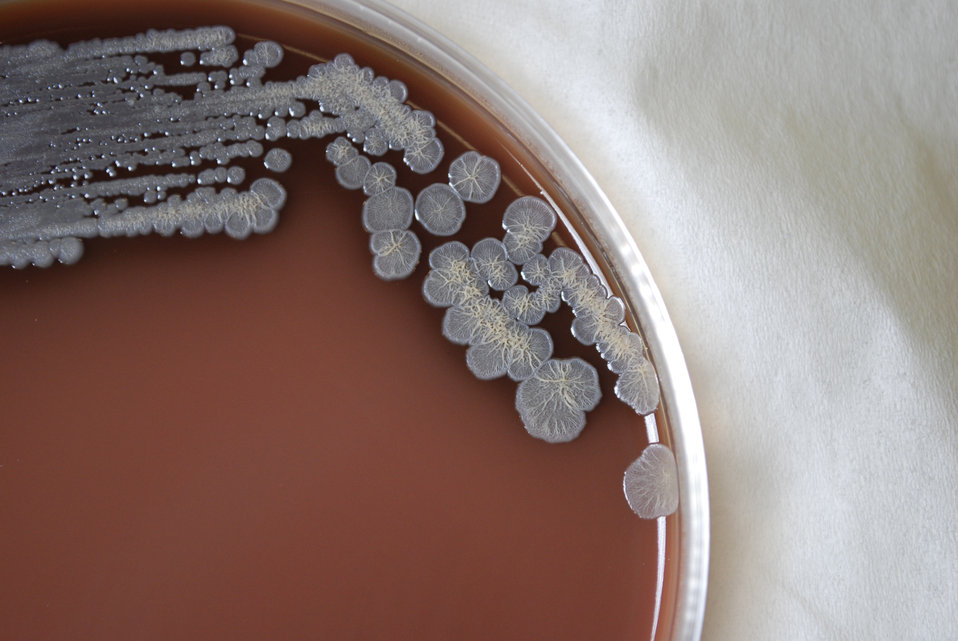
A closer view of PHIL 12279, this photograph depicts the colonial morphology displayed by Gram-negative Burkholderia pseudomallei bacteria, which was grown on a medium of chocolate agar, for a 72 hour time period, at a temperature of 37�C. B. pseudomallei bacteria are the cause for the infectious disease melioidosis.